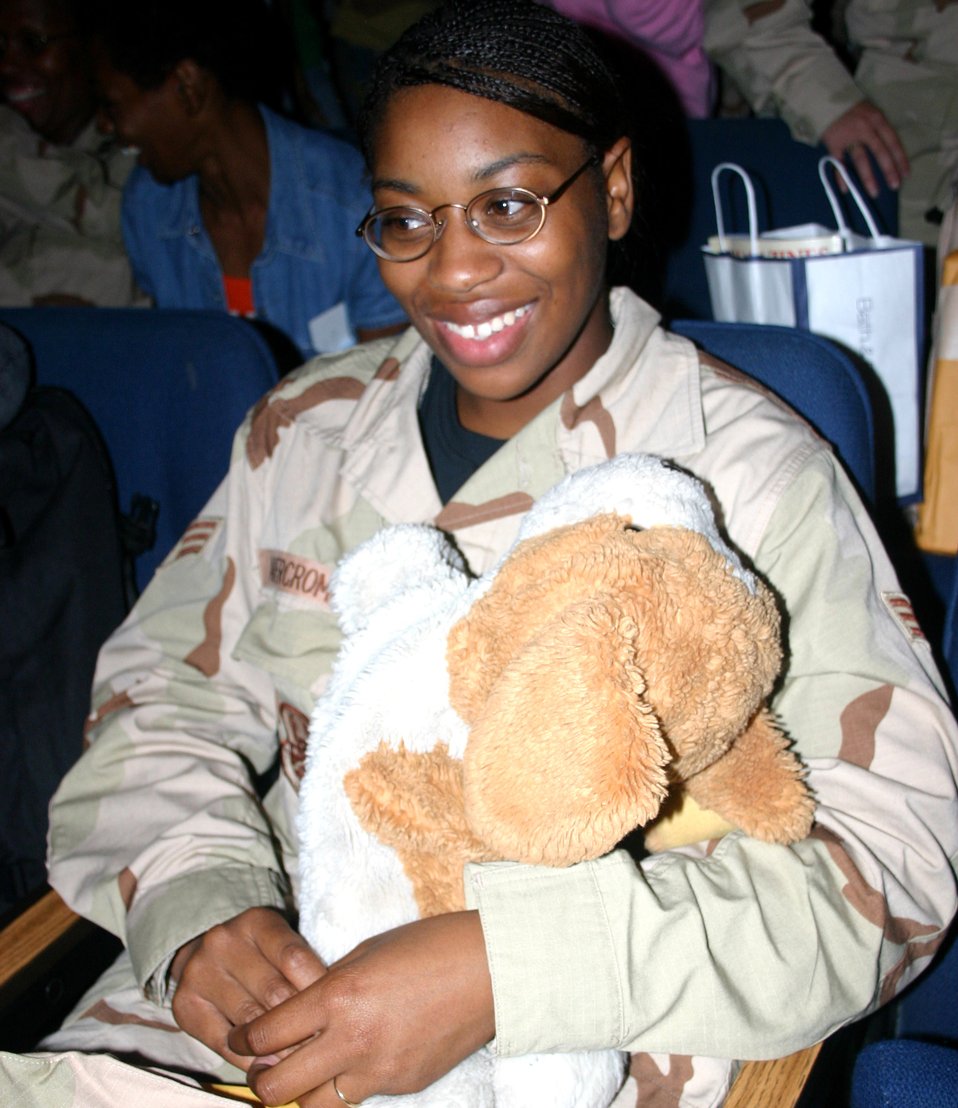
Lackland medics keep steady deployment pace

Senior Airman Dunyaska Abercrombie waits to board the plane that will take her and approximately 100 other deploying Airmen from the 59th Medical Wing at Lackland Air Force Base, Texas, to various locations in Southwest Asia. More than 200 Airmen are set to deploy from the base for Air Expeditionary Force 3 and 4. Airman Abercrombie is assigned to the 759th Surgical Operations Squadron.